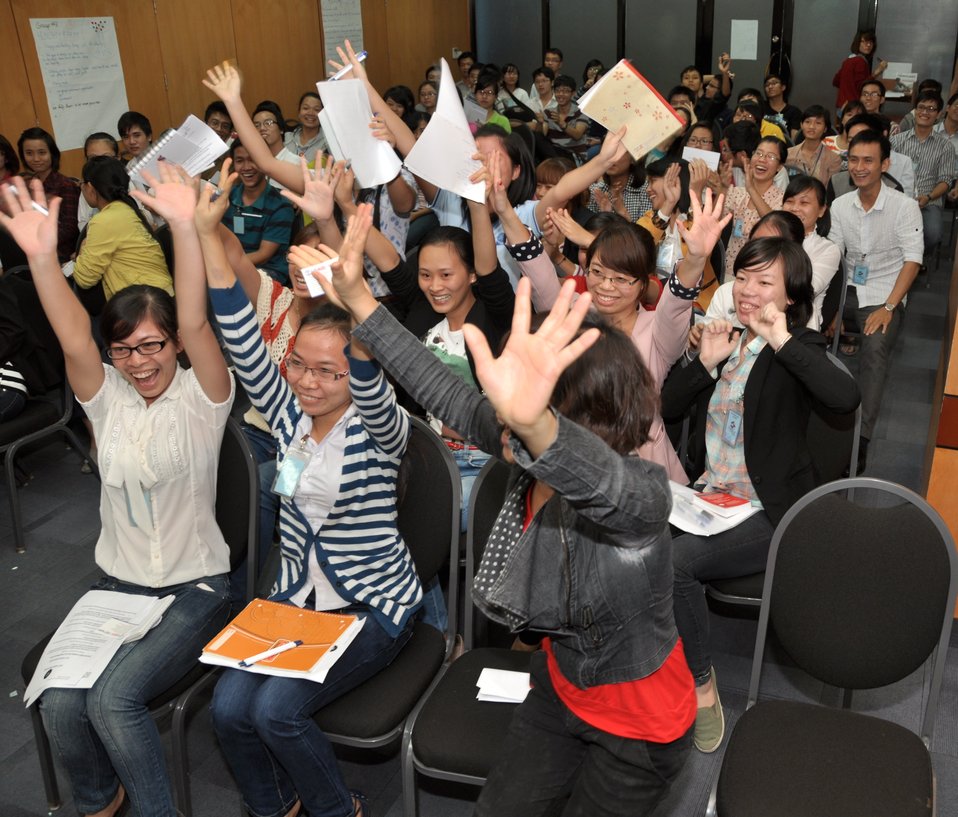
Vietnamese university students join the Business Plan Mashup exercise

Photo: @USAIDVietnam, November 16, 2012